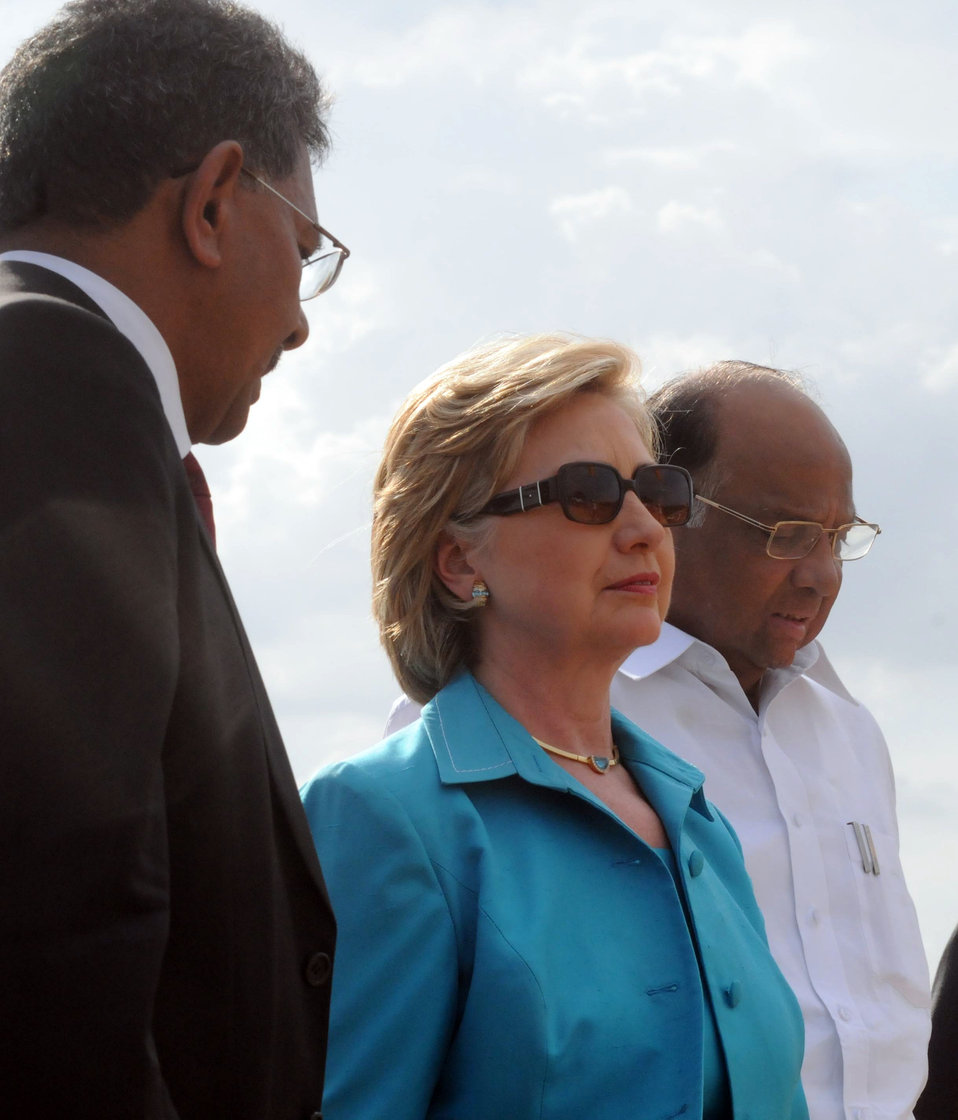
Secretary Clinton Visits Indian Agricultural Research Institute

U.S. Secretary of State Hillary Rodham Clinton, with Sharad Pawar, Minister of Agriculture, Consumer Affairs, Food and Public Distribution (right), and Dr. Mangala Rai, President of the National Academy of Agricultural Sciences (left), tours the Indian Council for Agricultural Research’s (ICAR) Indian Agricultural Research Institute (IARI) in Pusa, New Delhi.